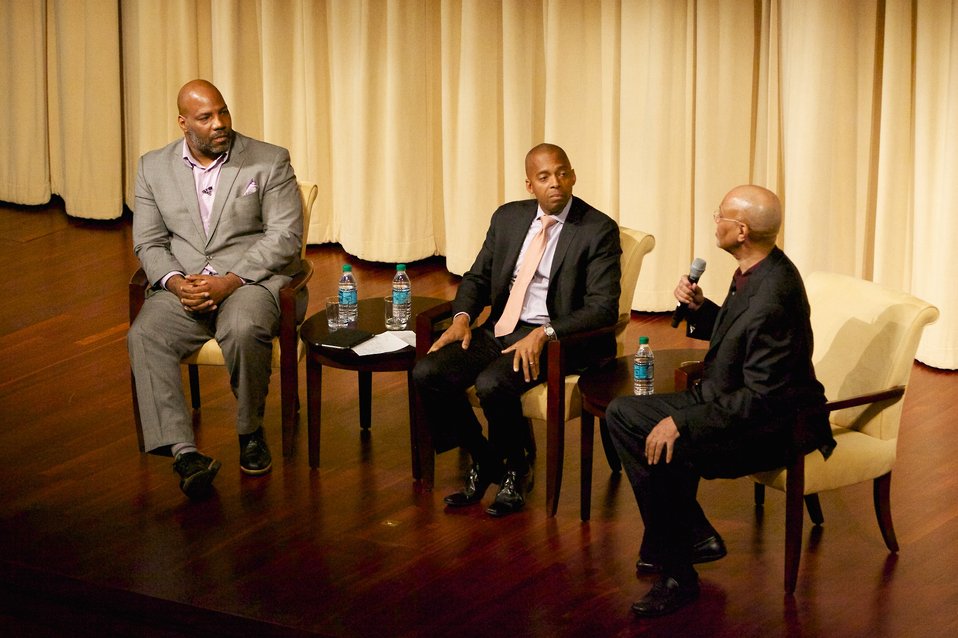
Solomon Northup's Odyssey